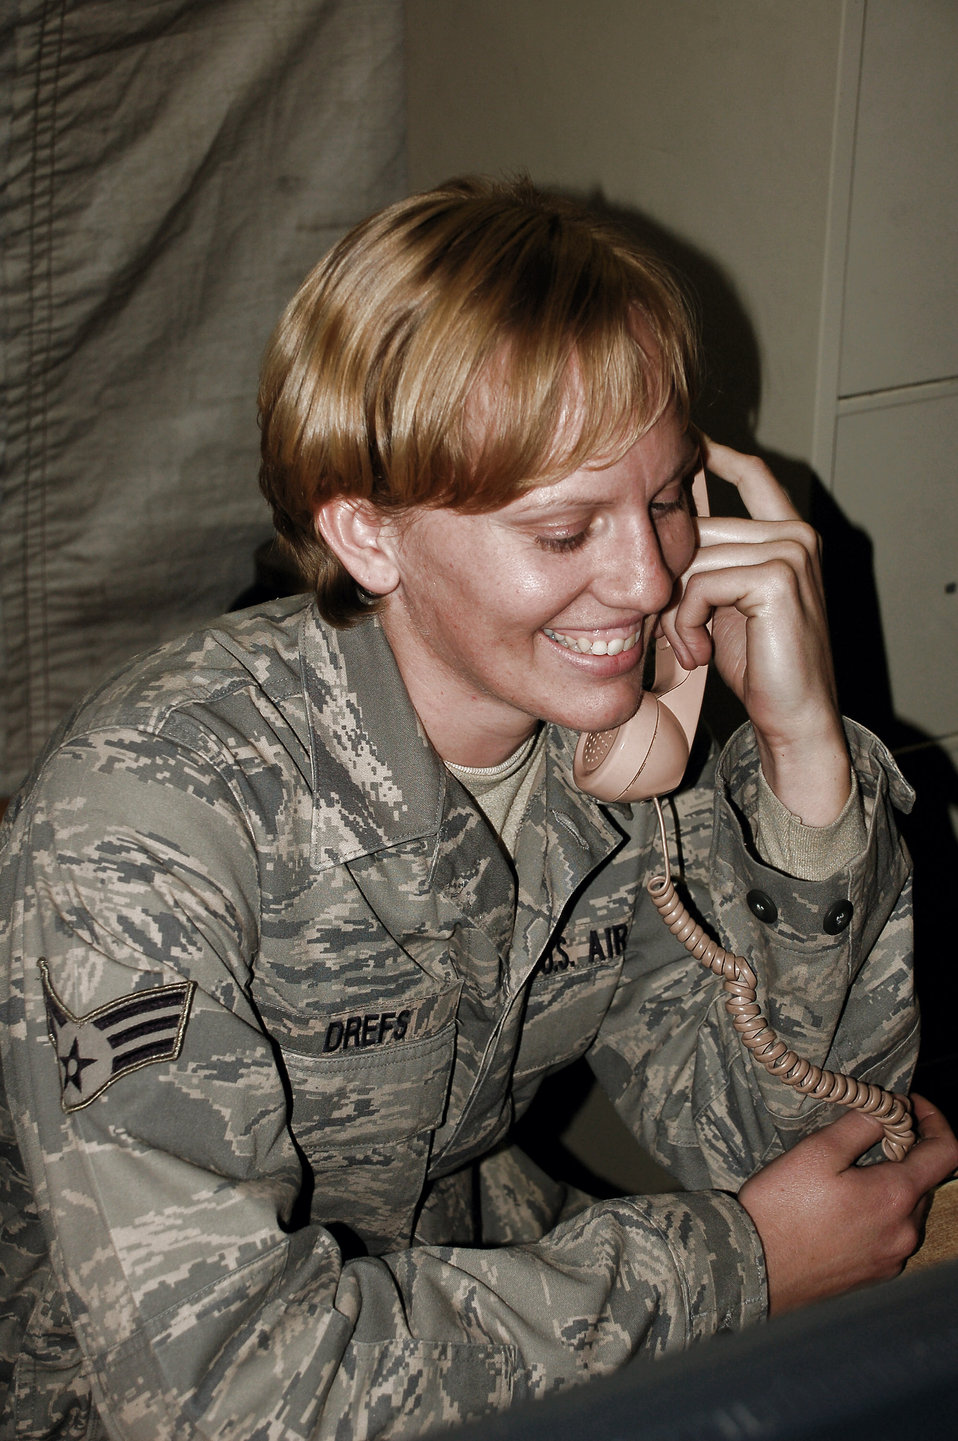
Manas Airman receives surprise call from president

Senior Airman Victoria Drefs is all smiles as President George W. Bush calls and wishes her a happy Thanksgiving from Camp David, Md., Nov. 27 at Manas Air Base, Kyrgyzstan. She was one of two deployed Airmen selected to receive a morale call from the president. Airman Drefs is a fuels specialist with the 376th Air Expeditionary Wing.